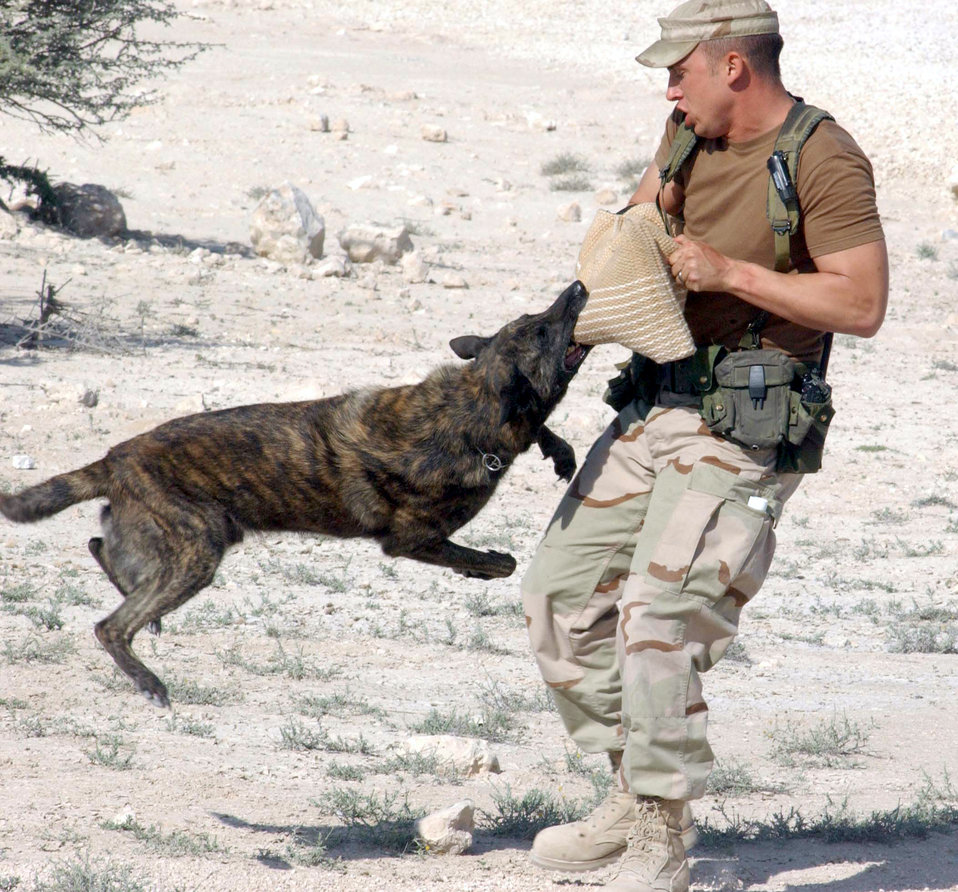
Full attack

SOUTHWEST ASIA -- Senior Airman Chris Ward works with Zorro during a training exercise at a forward-deployed location Jan. 1. Aiman Ward is a security forces member and Zorro is a military working dog from the 379th Expeditionary Security Forces Squadron.